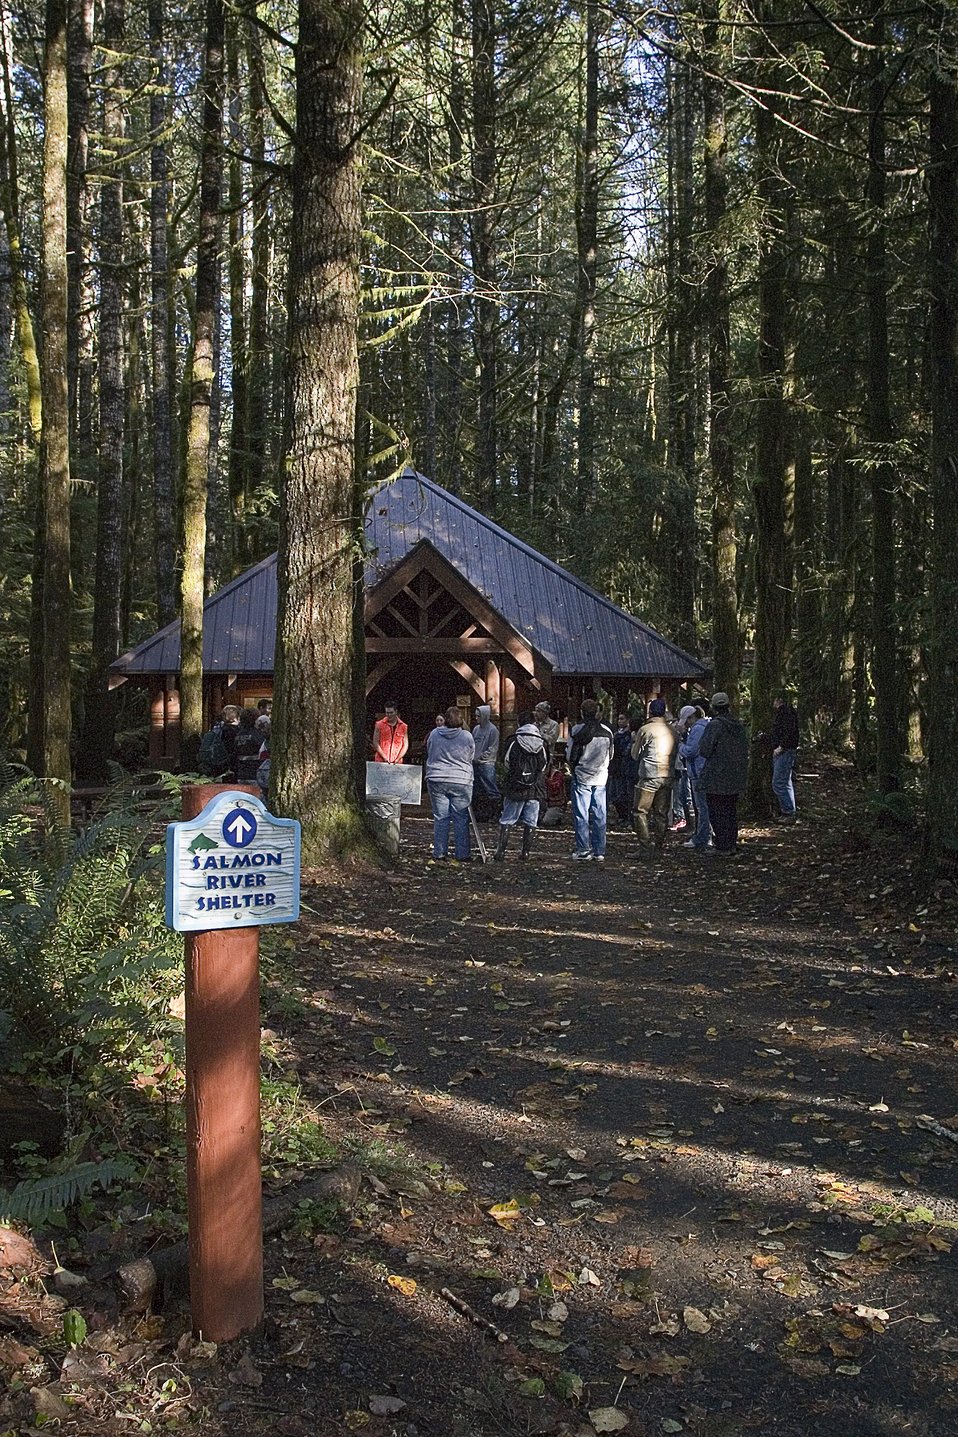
The Salmon River Shelter is used during the spring and fall by Wolftree and other groups for environmental education. Here the Reynolds Natural Resources Academy 12 and 11th grade students summarize there days activities.